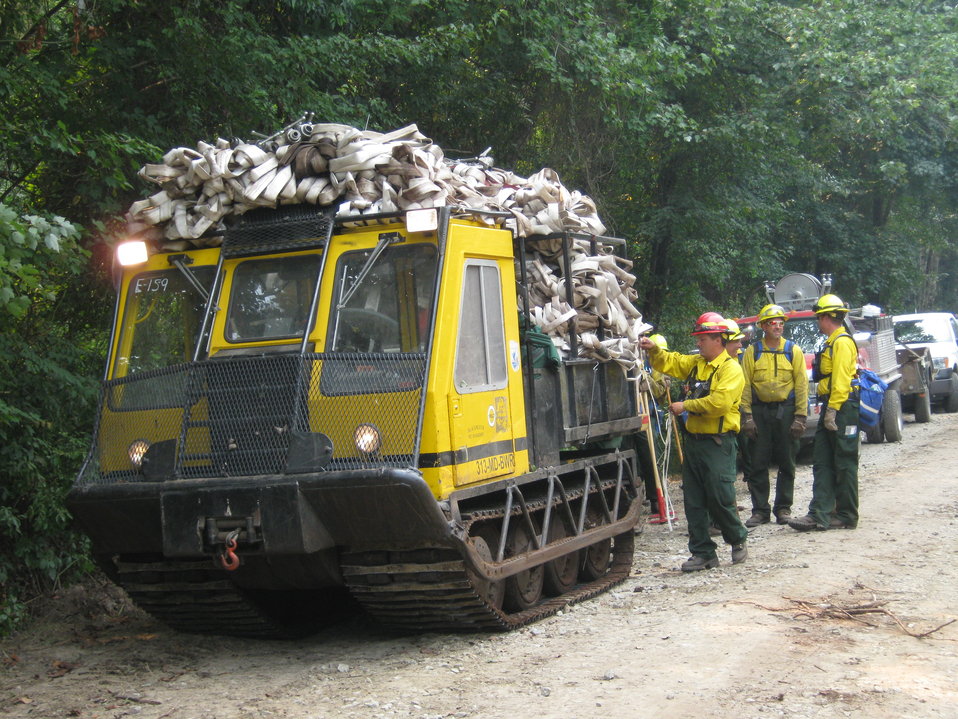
Bombardier laden with hose

Suffolk, VA, August 2011. A Bombardier, a tracked vehicle with low-ground pressure that can float, is loaded with hose for transport to the fire line at the Lateral West Fire burning on Great Dismal Swamp National Wildlife Refuge. The Bombarideri has a 300-gallon water tank.